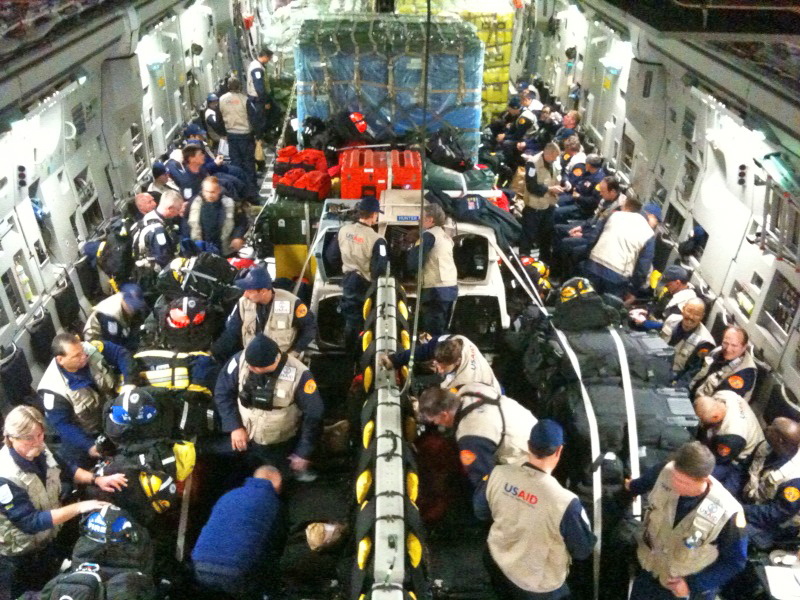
AMC aircraft deliver emergency responders, vital cargo to Haiti

An Air Mobility Command C-17 Globemaster III from Travis Air Force Base, Calif., departs March Air Reserve Base, Calif., Jan. 13, 2010, en route to Haiti with USAID support and supplies. AMC forces are actively working to support relief operations in Haiti after a 7.0-magnitude earthquake devastated the Caribbean nation Jan. 12, 2010.